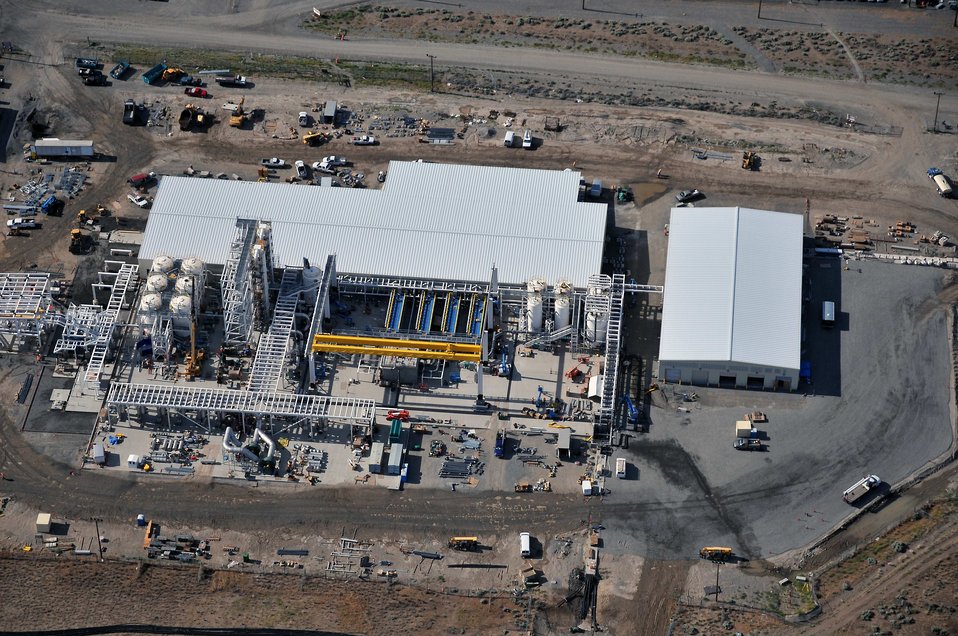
Hanford Treats Record Amount of Groundwater

An aerial view shows the 200 West pump-and-treat facility, which is scheduled to begin operating in 2012.

American Recovery and Reinvestment Act work to expand Hanford’s capacity for treating contaminated
groundwater led to the 2011 record amount. The Recovery Act funded the installation of more
than 300 groundwater wells and construction of two groundwater treatment facilities. The 100-DX
system began operating in late 2010 and the 200 West system is scheduled to begin operating in
2012. Those Recovery Act investments will enable Hanford to treat millions of additional gallons of
groundwater in 2012 and subsequent years.